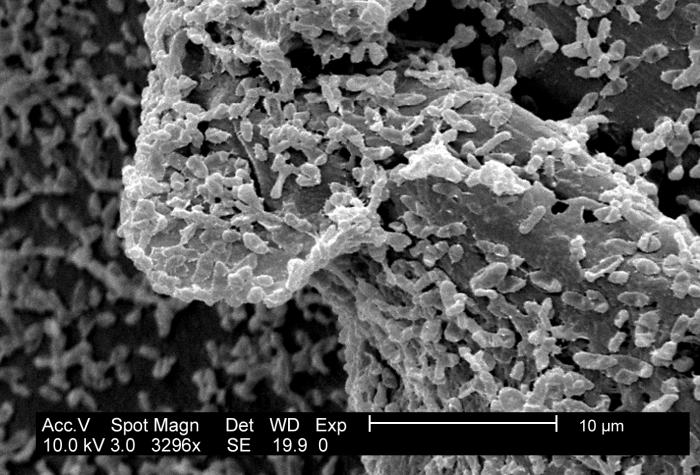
This SEM depicts a P. mirabilis (ATCC 29906) biofilm growing on PC (polycarbonate) coupons using a CDC biofilm reactor.